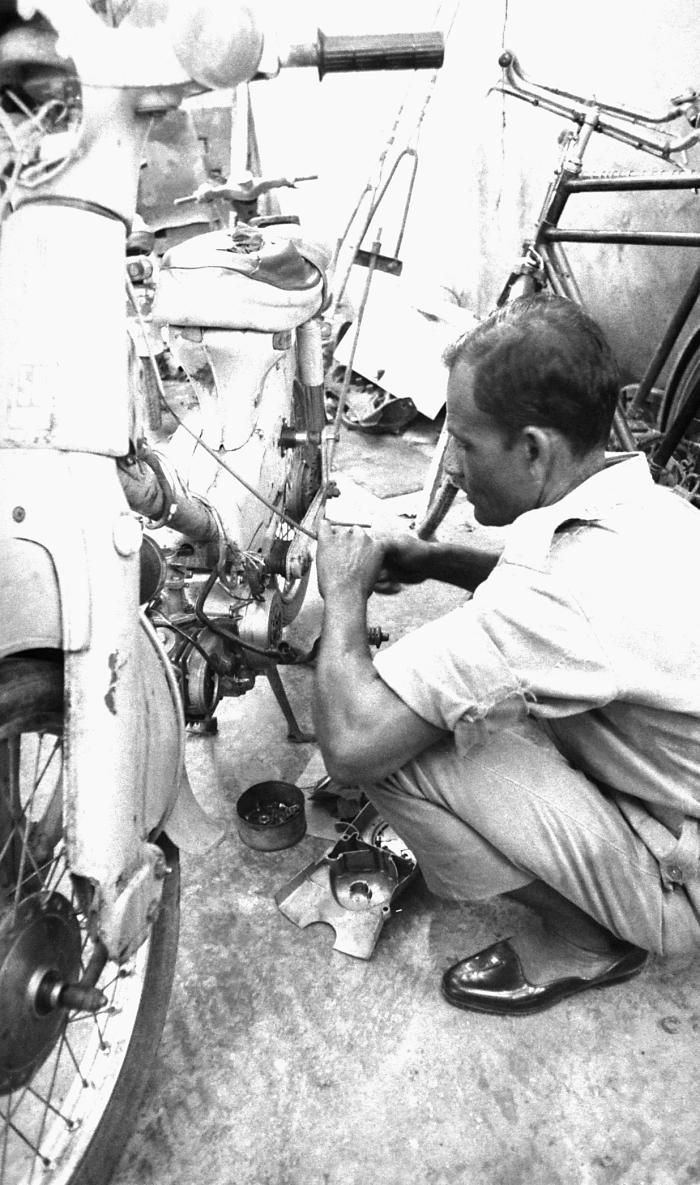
This photograph, showed a mechanic at work repairing a motor scooter located at the E.I.S., and public health personnel headquarters known as 'Smallpox Zero'. This image was part of a series captured by Pierre Claquin, M.D., B.A.C., who at the time was a member of the World Health Organization's Smallpox Eradication Program. Provided by former E.I.S. officer, Stanley O. Foster M.D., M.P.H., it was one of a series entitled 'The Story of One Smallpox Jeep', depicting the travails faced by the jeep, and its occupants of public health practitioners, as they road through the Bangladesh countryside in an attempt to eradicate smallpox from the country. Modes of transport included walking, country boats, motorboats, launches, trains, all terrain vehicles, buses, and as evidenced here, motor scooters.